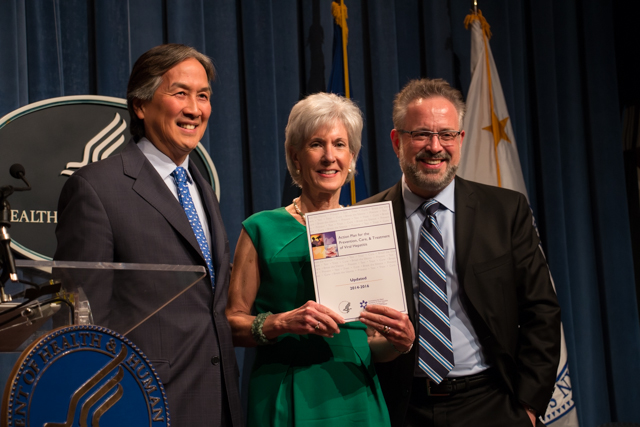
VHAP HK KS RV